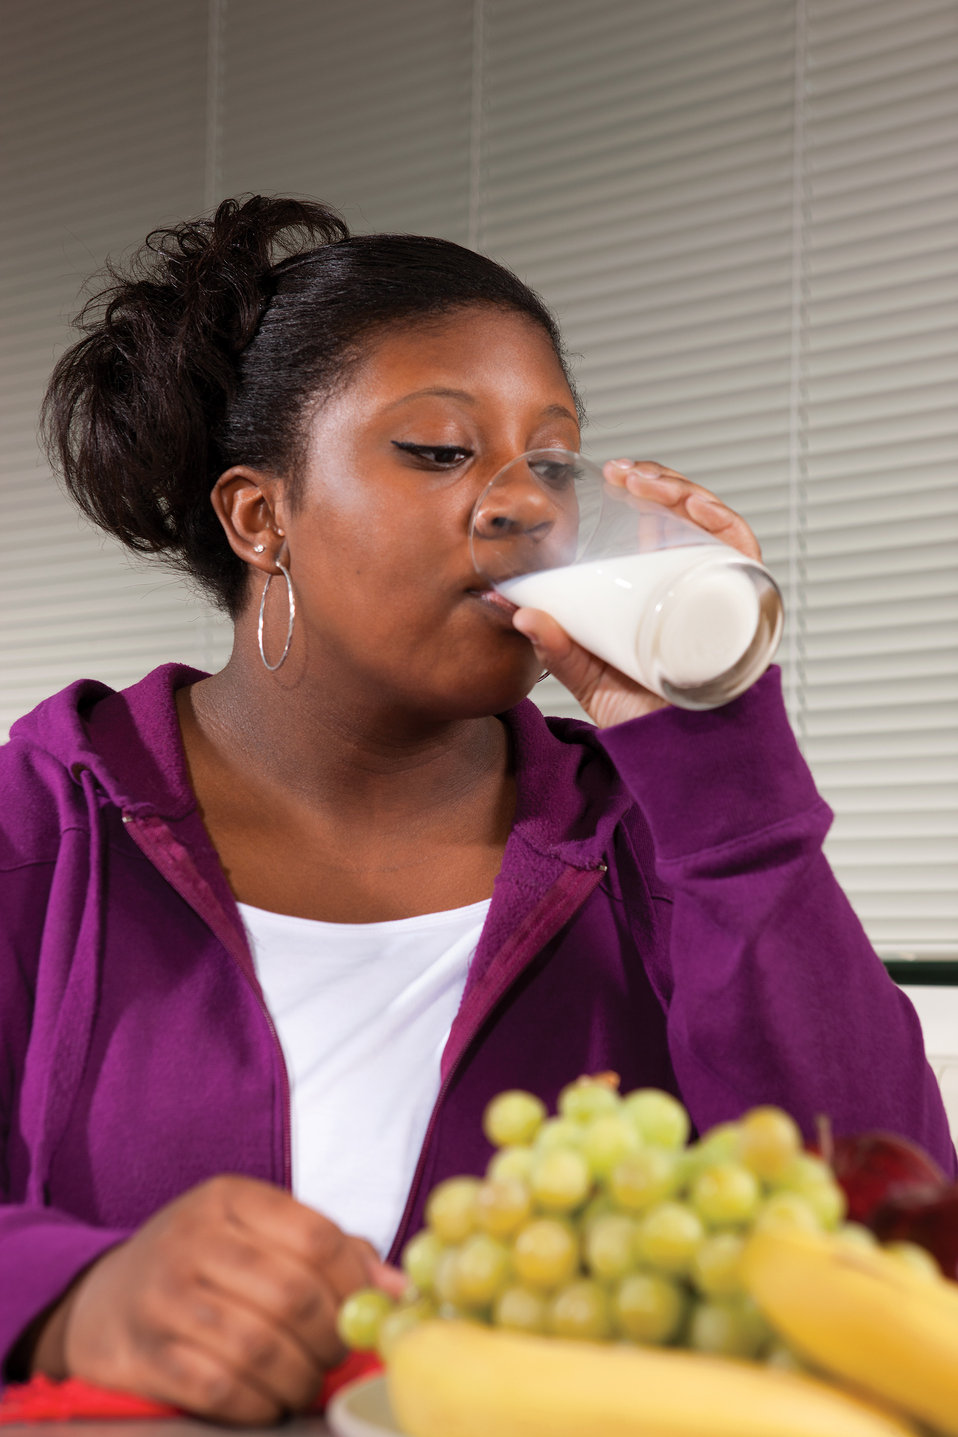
A young person drinks a glass of milk on May 22, 2003. The average intake of milk has been decreasing among children and adolescents while soda consumption has been going up, according to the U.S. Department of Agriculture’s (USDA) Agriculture Research Service (ARS) ARS Food Surveys Research Group in Beltsville, MD.